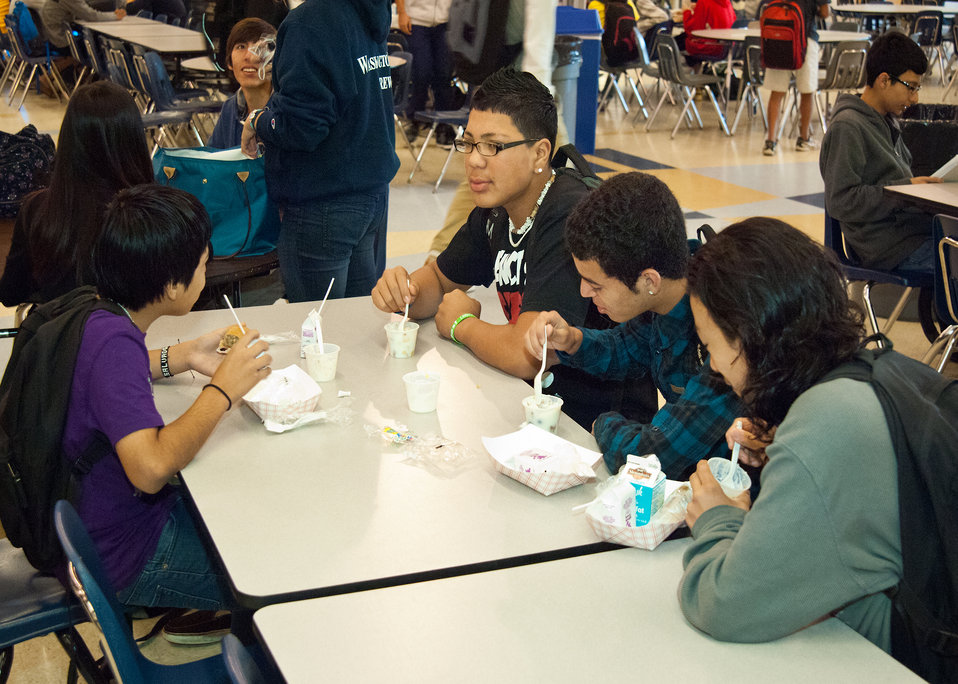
From left: Jon Flores, Bryan Maldonado, Keysmev Galeas and Andy Hernandez, students at Washington-Lee High School in Arlington, Virginia enjoy parfait cups of yogurt, fruit and granola for breakfast on Wednesday, October 25, 2011. The National School Breakfast and National School Lunch Programs are federally assisted meal programs administered by the United States Department of Agriculture, Food and Nutrition Service operating in public, nonprofit private schools and residential child care institutions. It provides nutritionally balanced, low-cost or free breakfasts and lunches to children each school day.